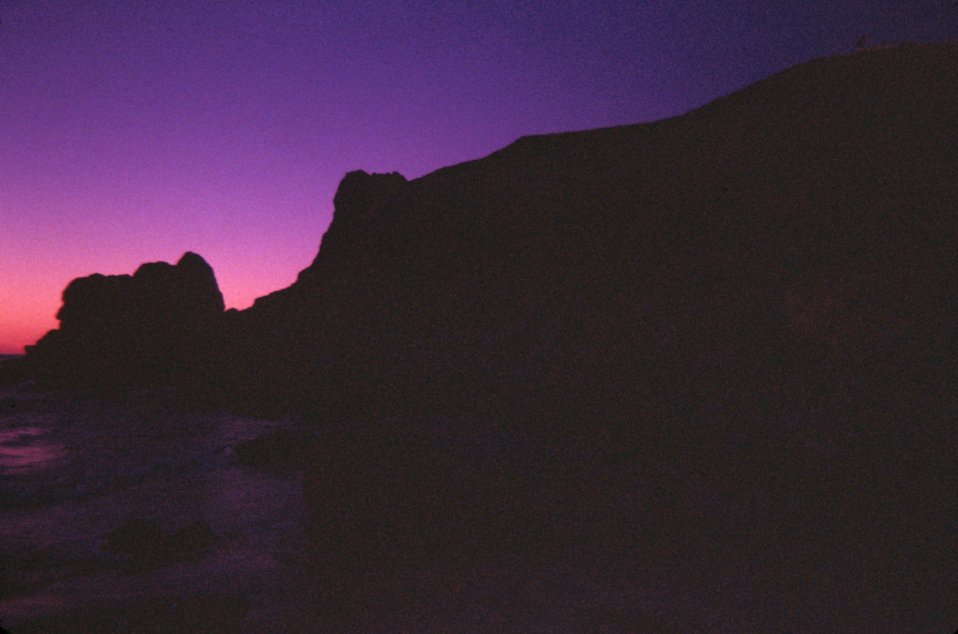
Dillon Beach